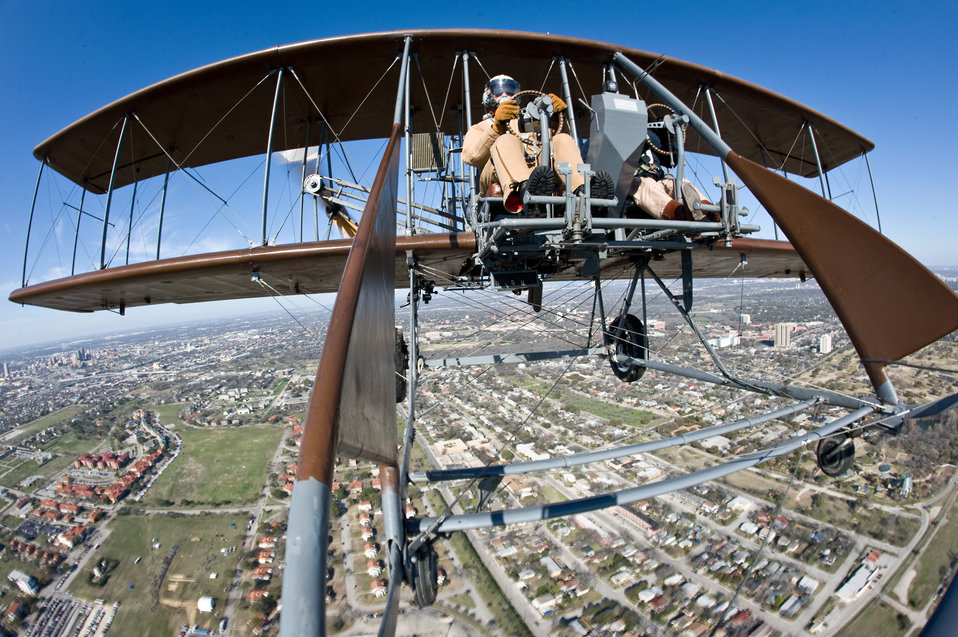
Military, civilians celebrate 100 years of military flight

Rich Stepler and Don Stroud, Wright